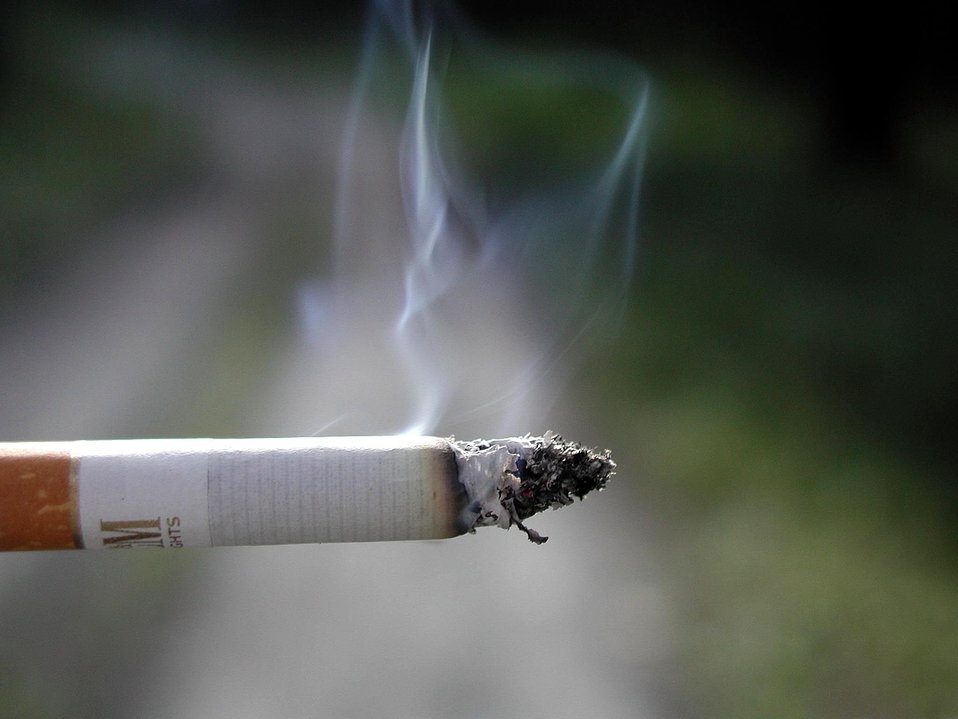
English:
Image title: Cigarette smoking Image from Public domain images website, http://www.public-domain-image.com/full-image/objects-public-domain-images-pictures/cigarettes-public-domain-images-pictures/cigarette-smoking.jpg.html